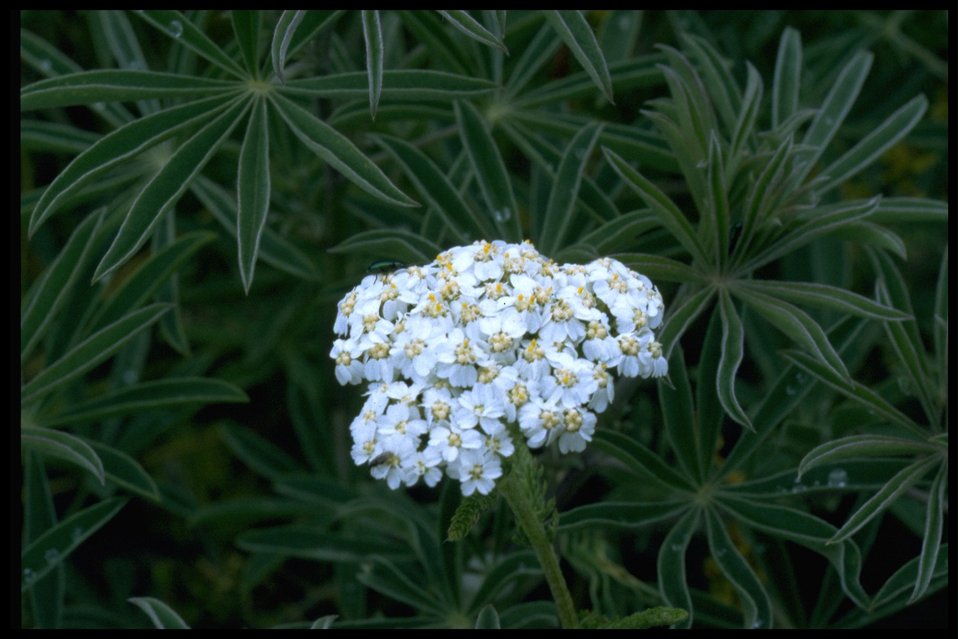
Medium shot of Yarrow wildflower (Achillea millifolium) and Lupine leaves.